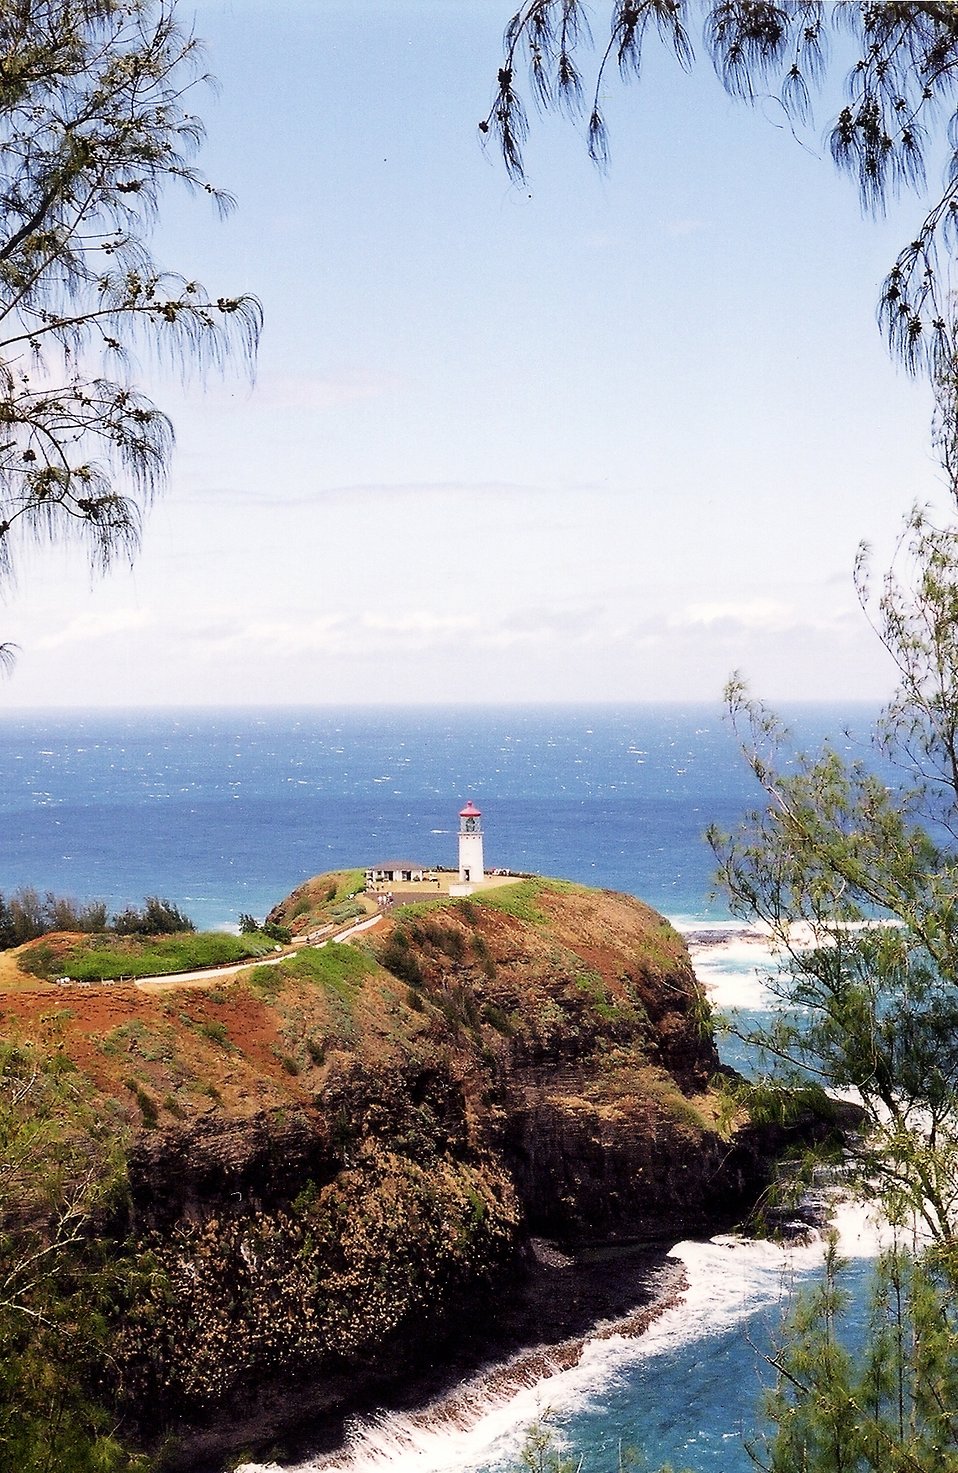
Kilauea Point NWR

Kilauea Point National Wildlife Refuge is one of the best places to view wildlife in the main Hawaiian Islands. (USFWS).